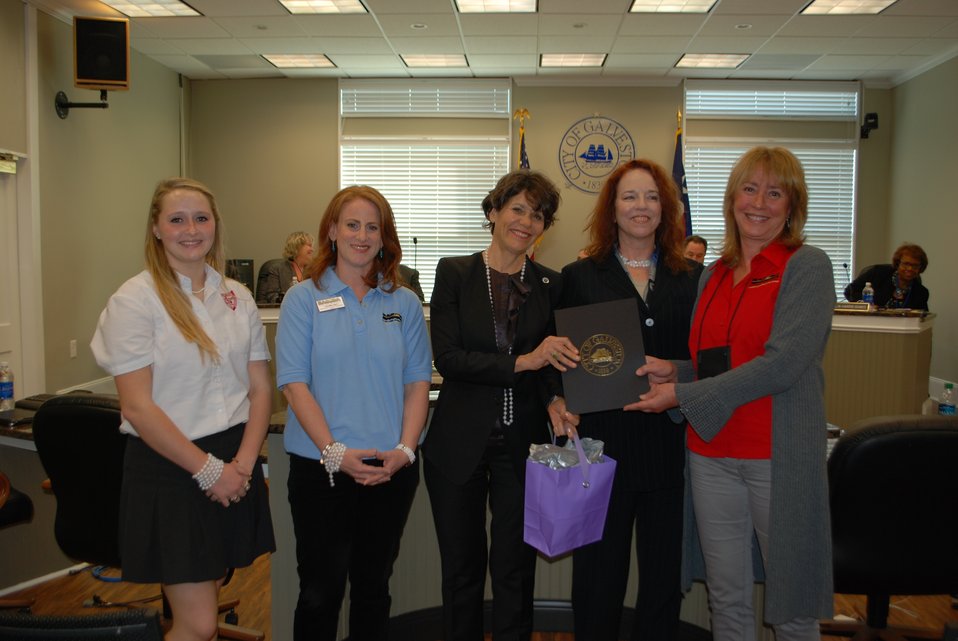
BACODA holds NDFW 2013

Galveston City, Tex. Galveston County Community Coalition brought National Drug Facts Week activities to the island for the third year in a row. The kicked things off with a proclamation from Galveston City Council declaring January 28-February 3 to be National Drug Facts Week. Councilwoman Elizabeth Beeton, Galveston City Council (Center) presents National Drug Facts Week Proclamation to Emily, Senior at O'Connell Preparatory School; Jennifer Hart, Coalition Liaison, GCCC; Dr. Kathryn Cunningham, UTMB Center for Addiction Research; and Mary Beth Trevino, Coalition Coordinator, GCCC.